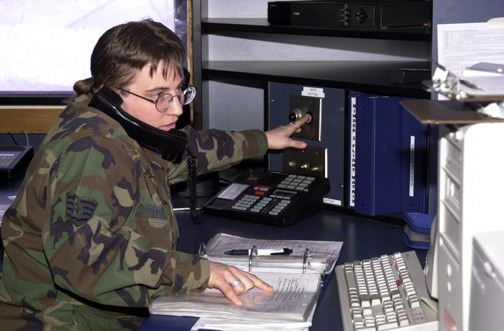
Deploying home

NORTH DAKOTA -- Staff Sgt. Barbara Barron investigates the cause of an alarm activation at a missile launch facility. She is a flight security controller assigned to the 91st Missile Security Forces Squadron at Minot Air Force Base, N.D.